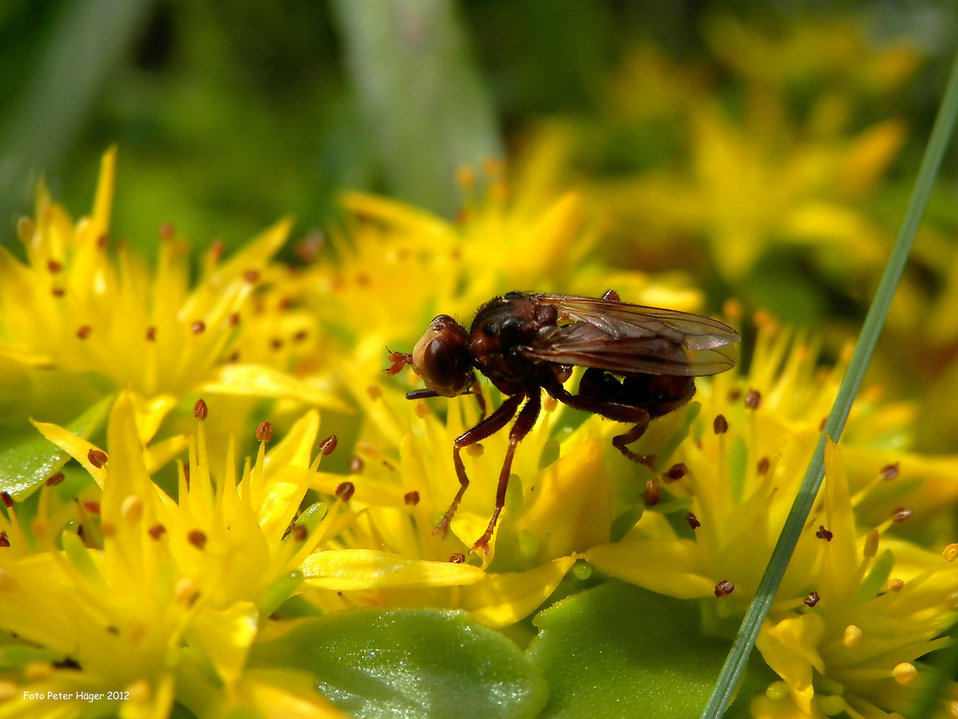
Fly

Some sort of maroon bow tie.